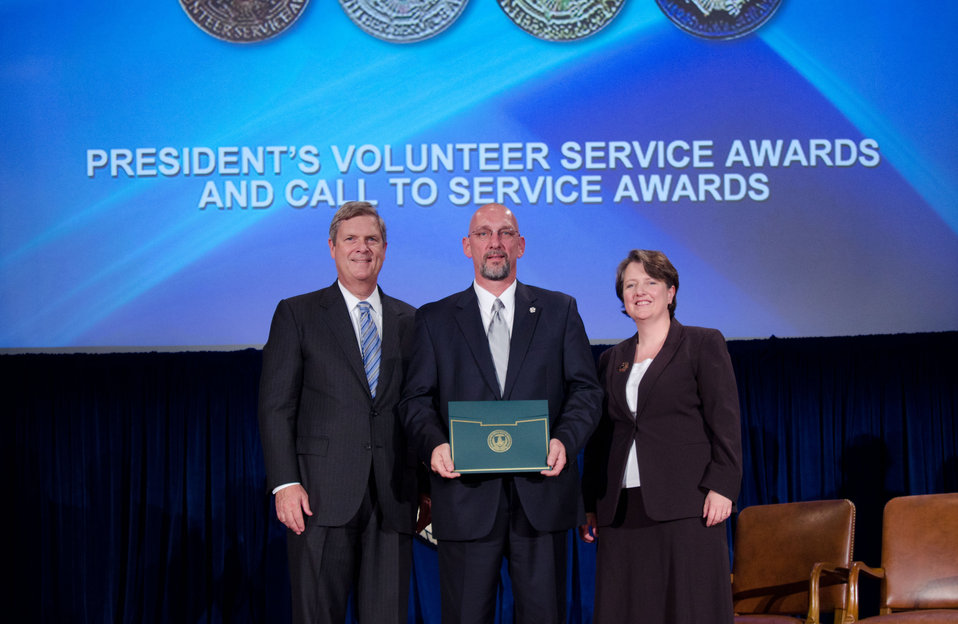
Agriculture Secretary Tom Vilsack (l) and Deputy Secretary Kathleen Merrigan (r), presents the President’s Volunteer Service Awards and Call to Service Award to Brian Sutherland, Rural Development. On Wednesday, September 14, 2011 in the Jefferson Auditorium at the US Department of Agriculture in Washington, DC.